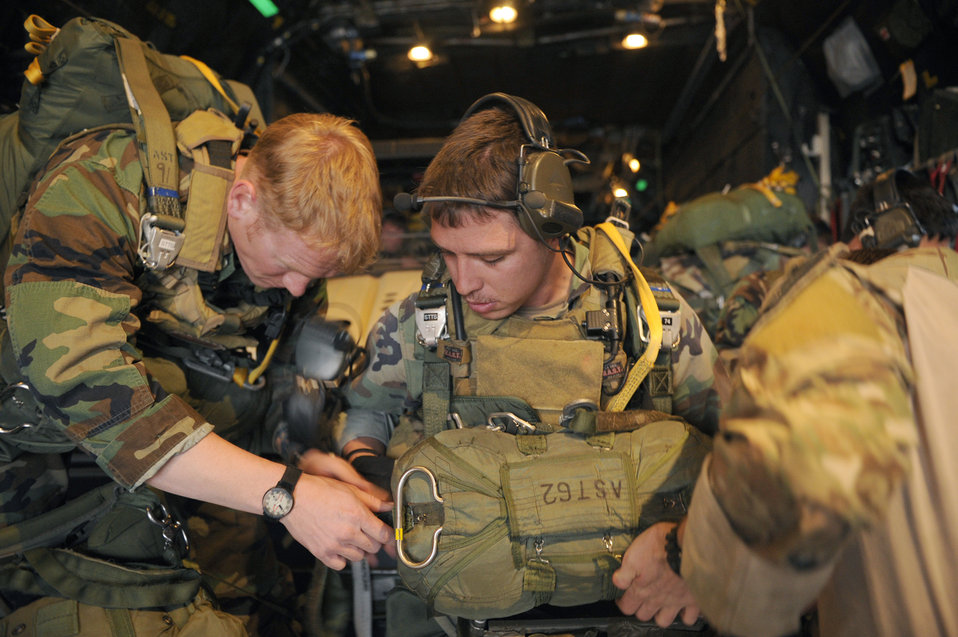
Joint training

A combat control student watches as his fellow Airmen check his parachute aboard an MC-130P Combat Shadow during an airfield seizure mission March 2, 2011, over Eglin Air Force Base, Fla., in support of Emerald Warrior. Emerald Warrior is a U.S. Special Operations Command-sponsored, multiservice exercise designed to leverage lessons learned from overseas operations.